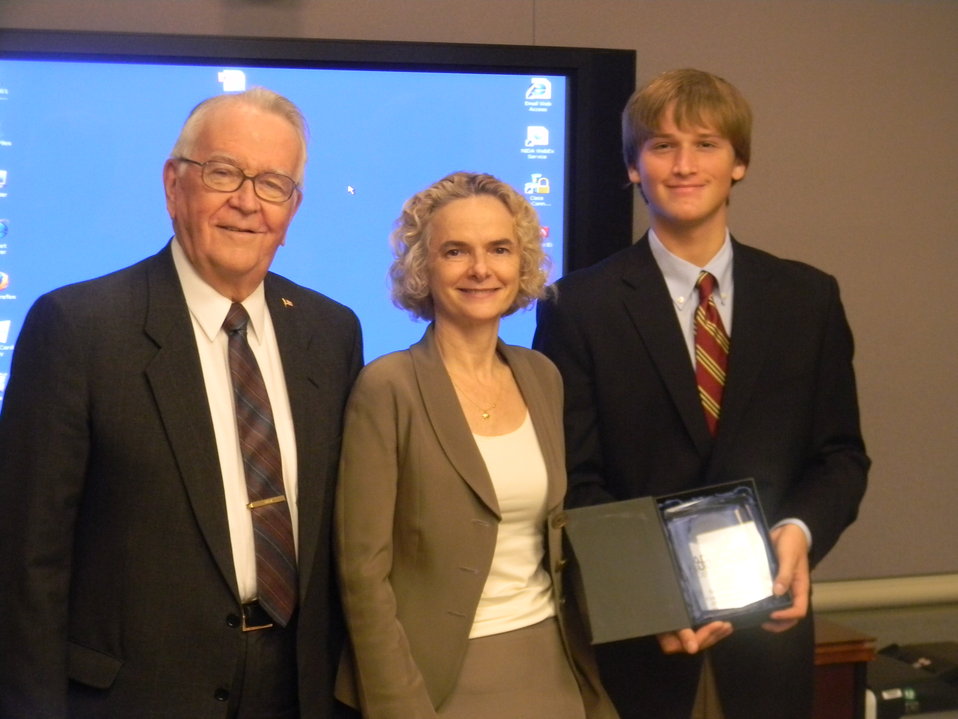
Friends of NIDA Dr. William Dewey, NIDA Director Dr. Nora Volkow and 1st Place Winner John Edward Solder